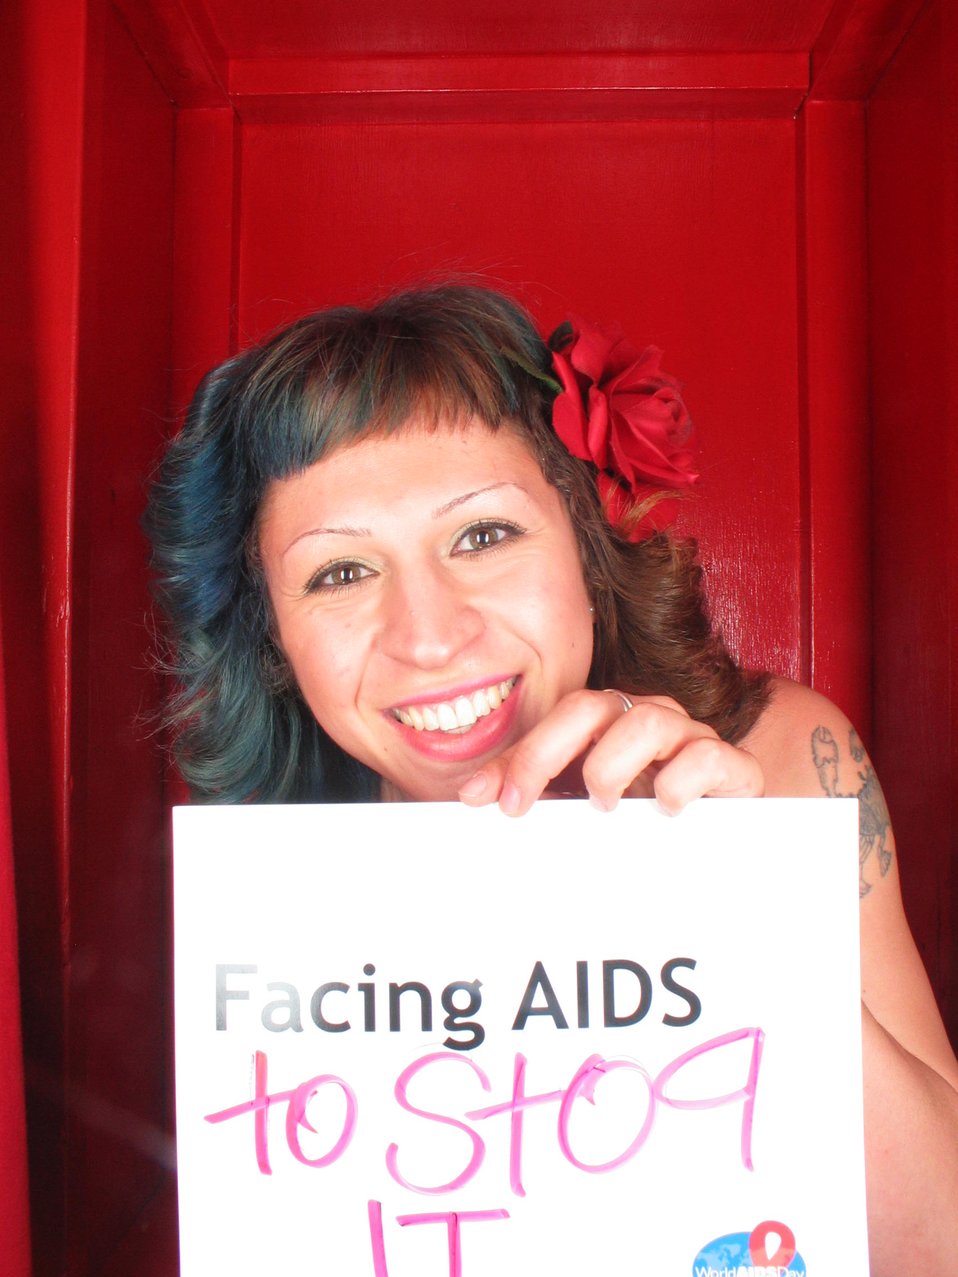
Facing AIDS to stop it